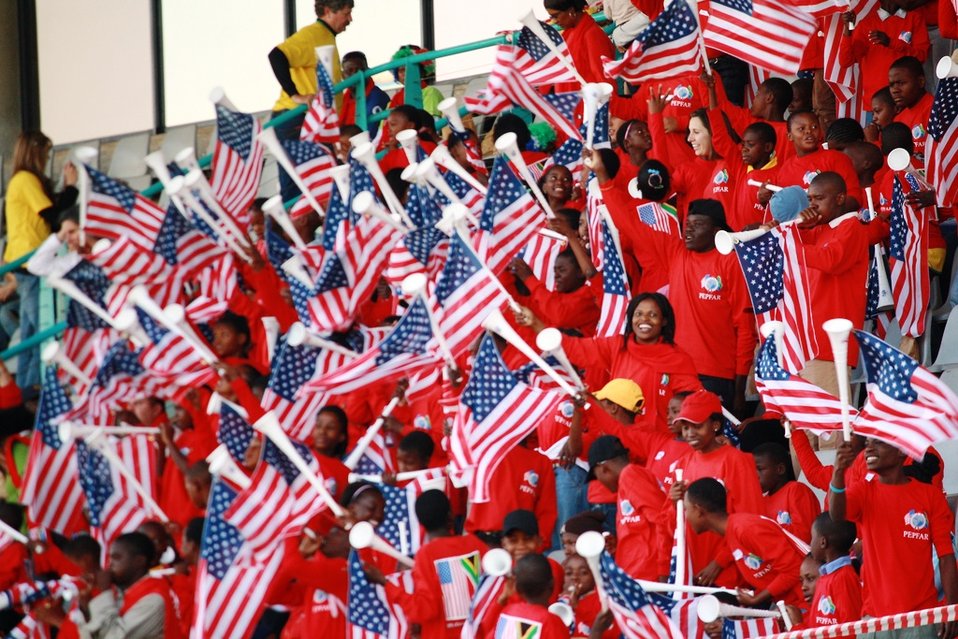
South African students and U.S. Mission to South Africa families cheer on the U.S. National Soccer team by waving American flags and playing vuvuzelas at the U.S. National Soccer Team's open practice session at the Pliditch Stadium in Pretoria, South Africa, on June 6, 2010. The U.S. National Soccer Team is preparing for the 2010 World Cup in South Africa.